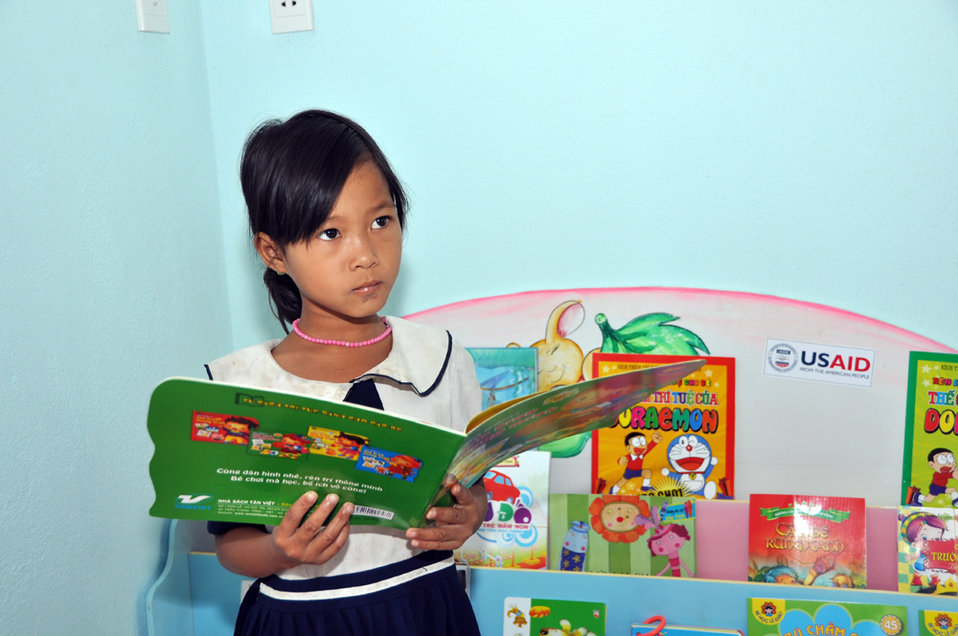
USAID contributes to refurbished pre-schools and teacher training in Vietnam